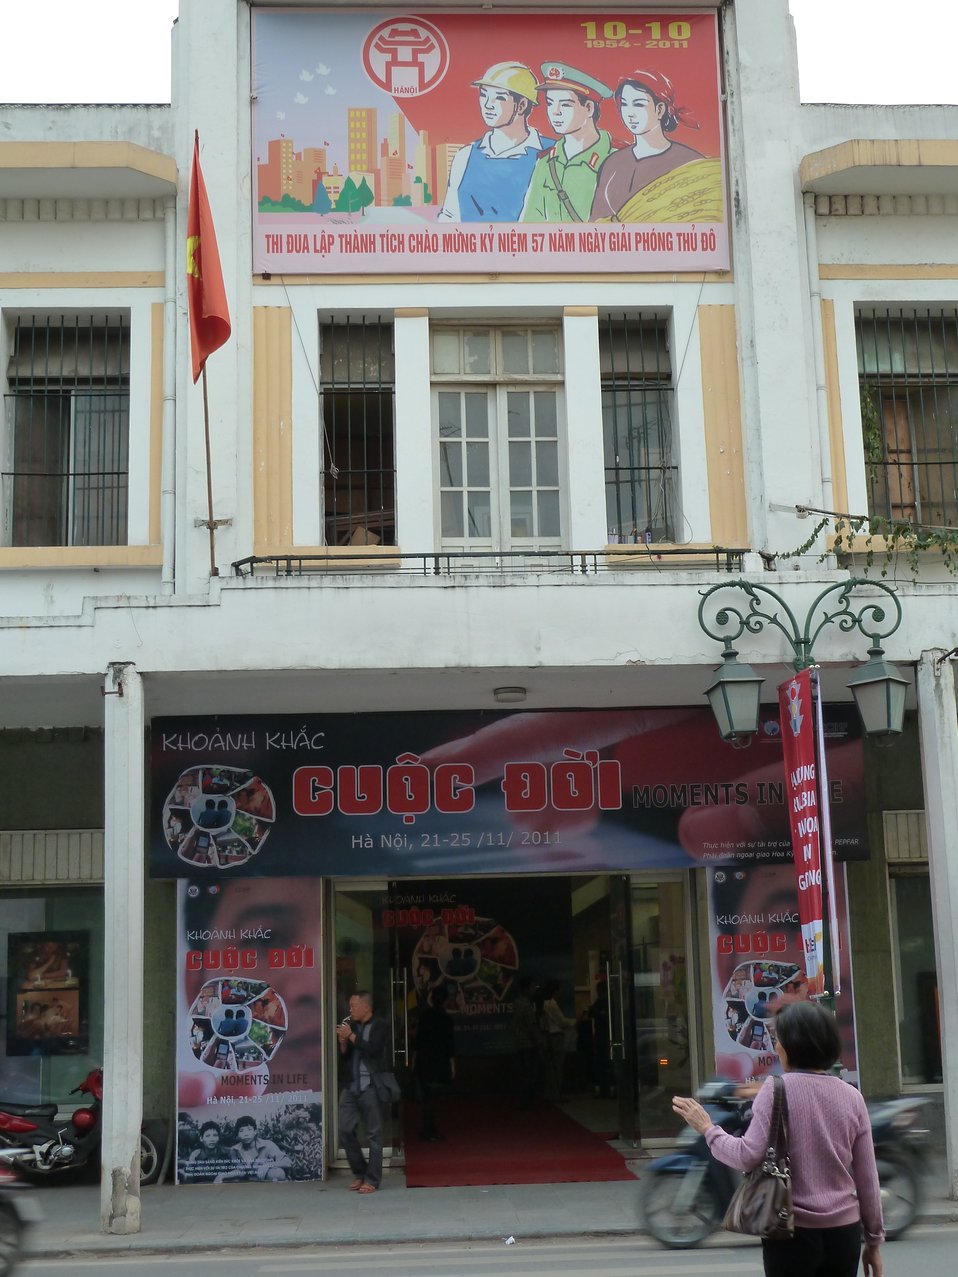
Moments in Life Exhibit: PEPFAR